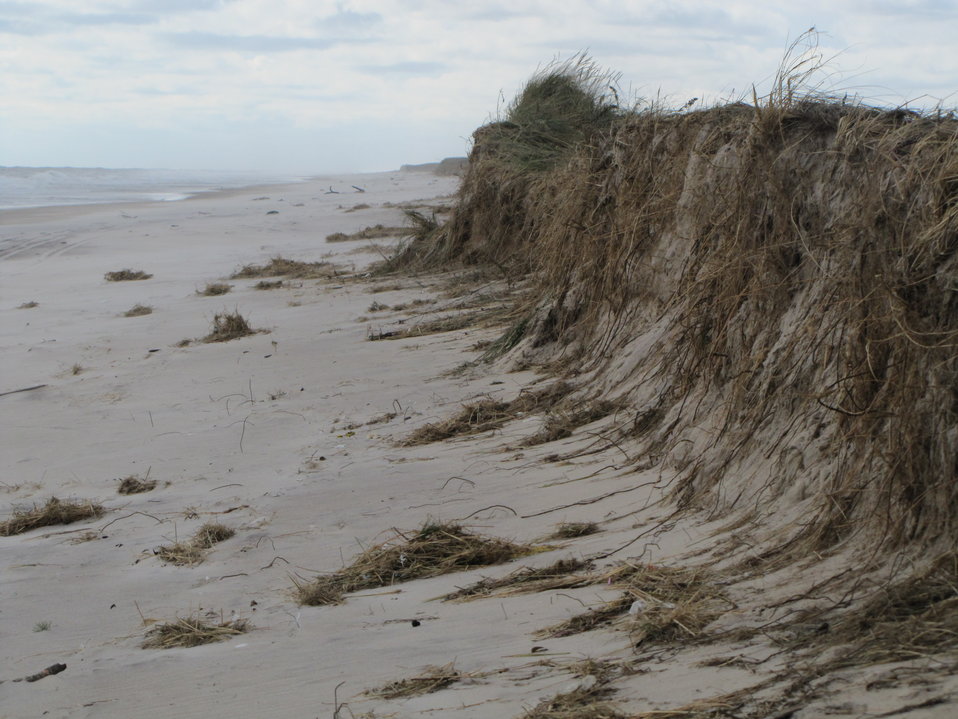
Damage to dune at Amagansett National Wildlife Refuge (NY)

Dune damage at Amagansett National Wildlife Refuge, part of the Long Island National Wildlife Refuge Complex.